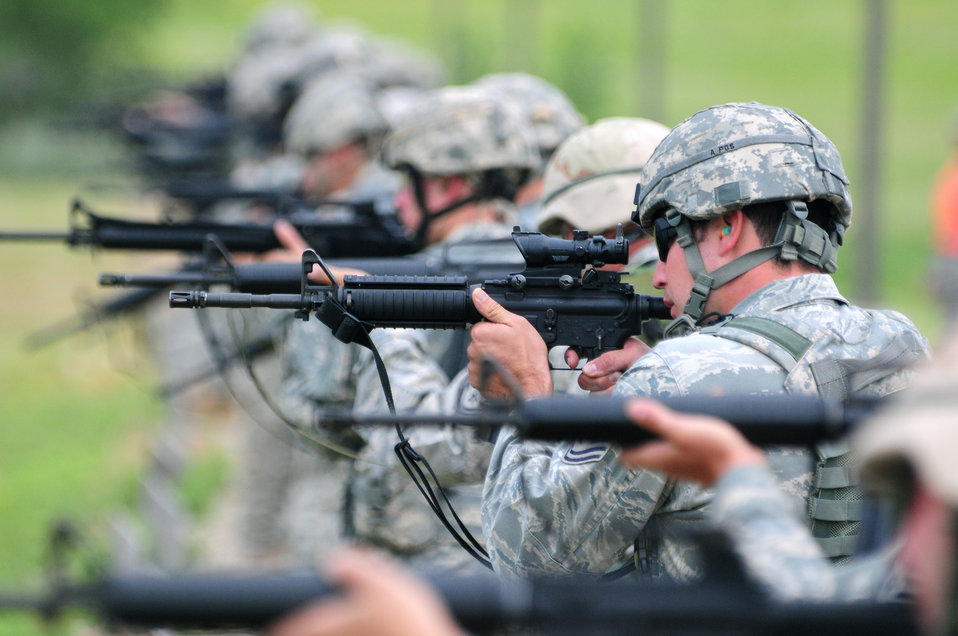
Got the target in my scope

Airmen and Soldiers from the North Dakota National Guard gather at Camp Grafton South for a two-day marksmanship contest July 17-18, 2010. The North Dakota National Guard Adjutant General's Combat Marksmanship Match is held annually to promote marksmanship training and proficiency.